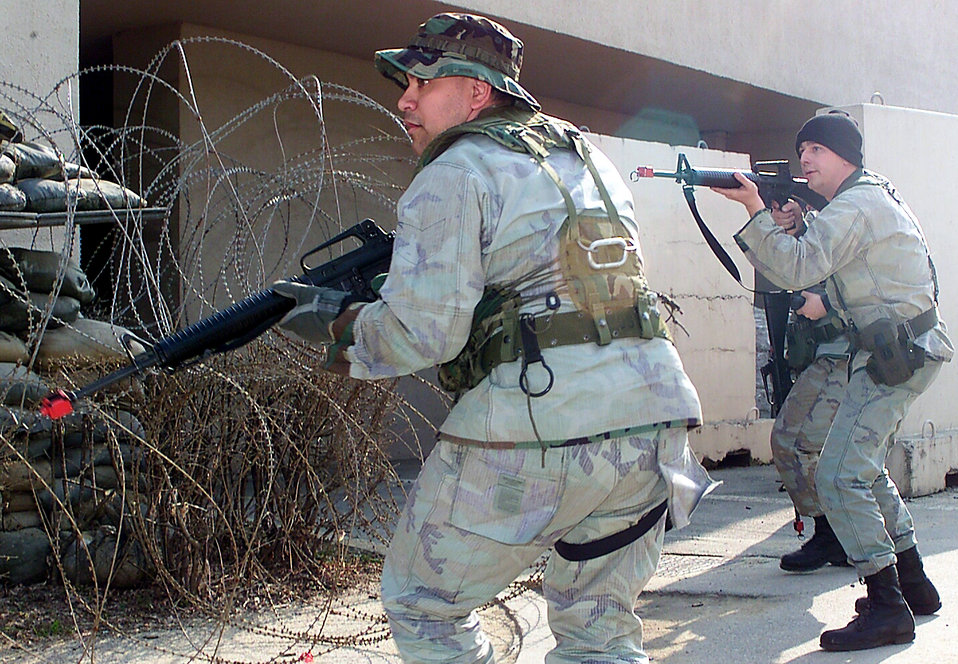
Bulldog patrol

OSAN AIR BASE, South Korea -- Technical Sgt. Joaquin Raya, left, and Senior Airman Neil Mayzick stay alert on patrol during exercise Beverly Bulldog 01-04 here March 22. Sergeant Raya is a member of the 51st Security Forces Squadron and Airman Mayzick is a member of the 51st Communications Squadron.